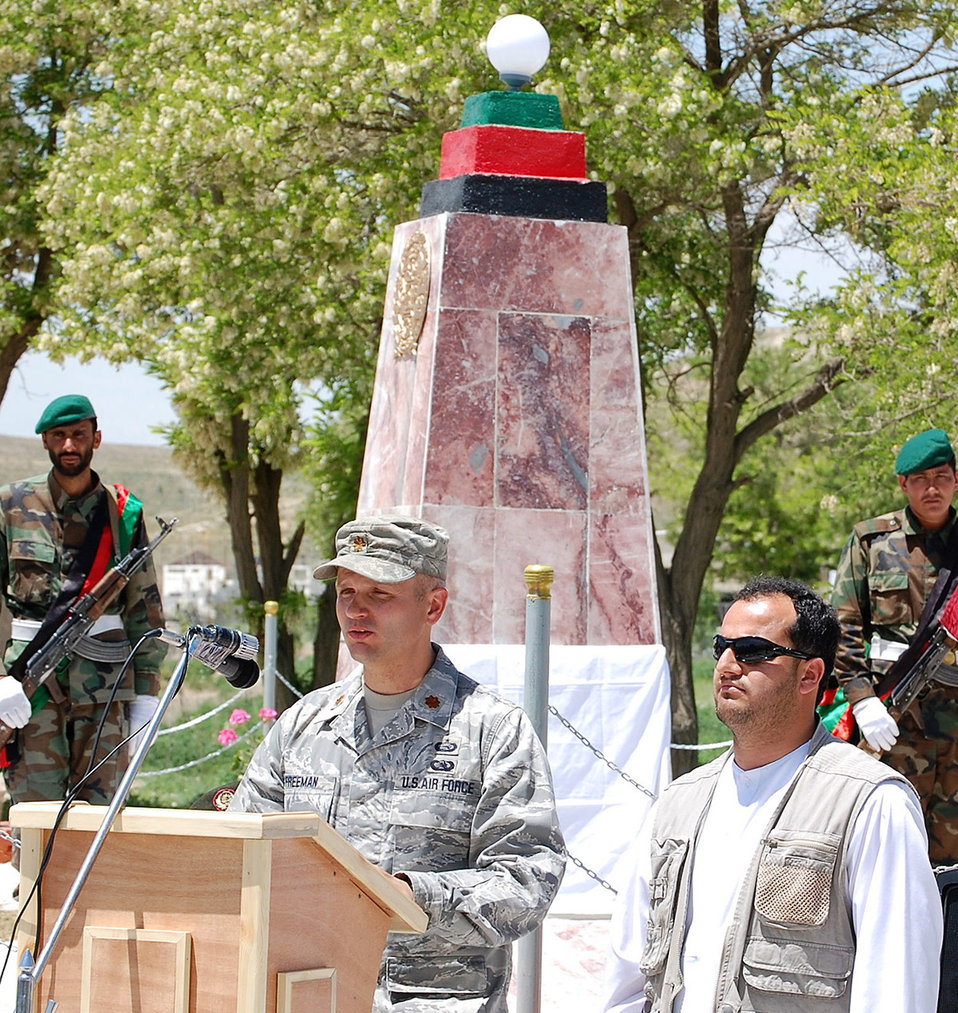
Monument dedication culminates effort of embedded American advisors

Maj. Brian Freeman talks about the bond shared between his team and the Afghan National Army unit. More than 250 U.S. servicemembers and Afghan security forces celebrated seven years of military cooperation, including 18 Airmen who have provided combat support and counter-insurgency training to more than 430 Afghan soldiers within the Afghan National Army in the last year. Major Freeman is a training team chief for more than 20 Airmen, Soldiers and Sailors embedded with the 5th Kandak (Battalion).